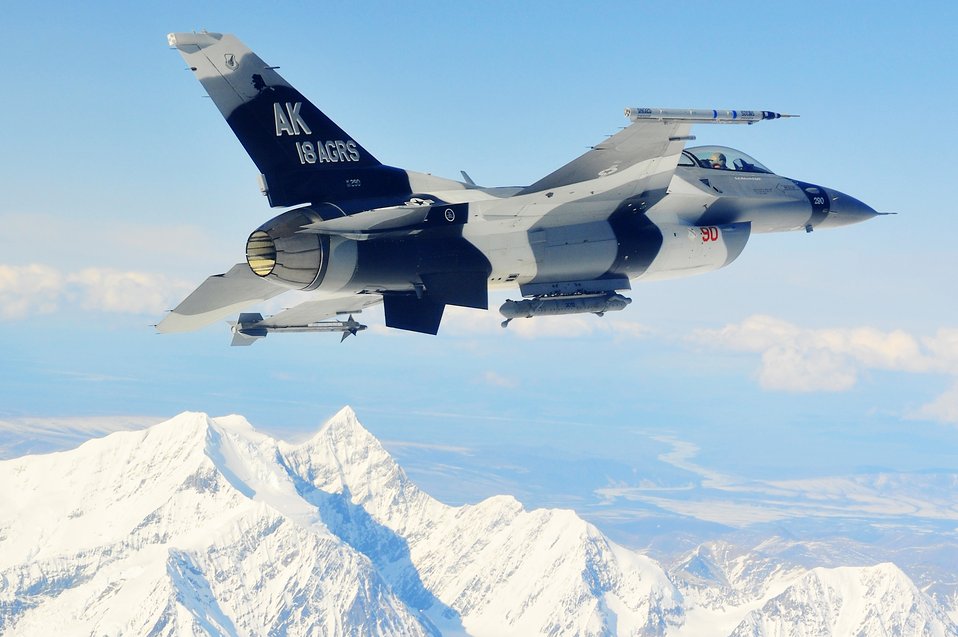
Looking to stir things up

An F-16 Fighting Falcon from the 18th Aggressor Squadron at Eielson Air Force Base, Alaska, soars over the Alaska Range April 20, 2010, during RED FLAG-Alaska 10-2. Aggressor pilots are trained to act as opposing forces in exercises like Red Flag to better prepare Air Force pilots for air combat.